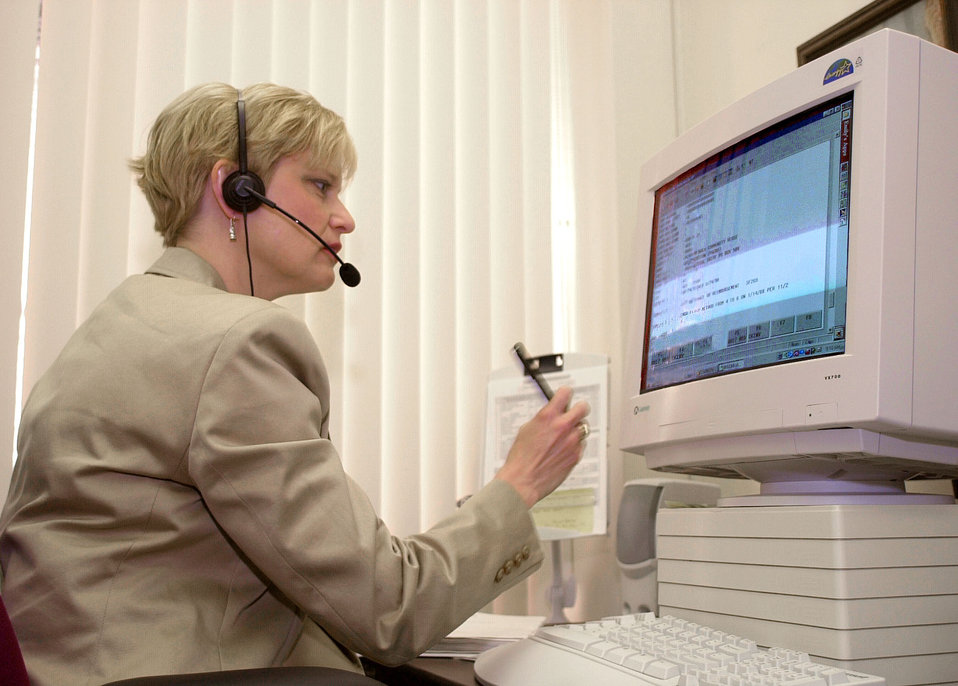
DOE Budget and finance working with on line customers Oak Ridge

00-0018-2 DOE photo by Lynn Freeny
DOE Budget & finance working with on line customers Oak Ridge Tennessee Feb. 2000